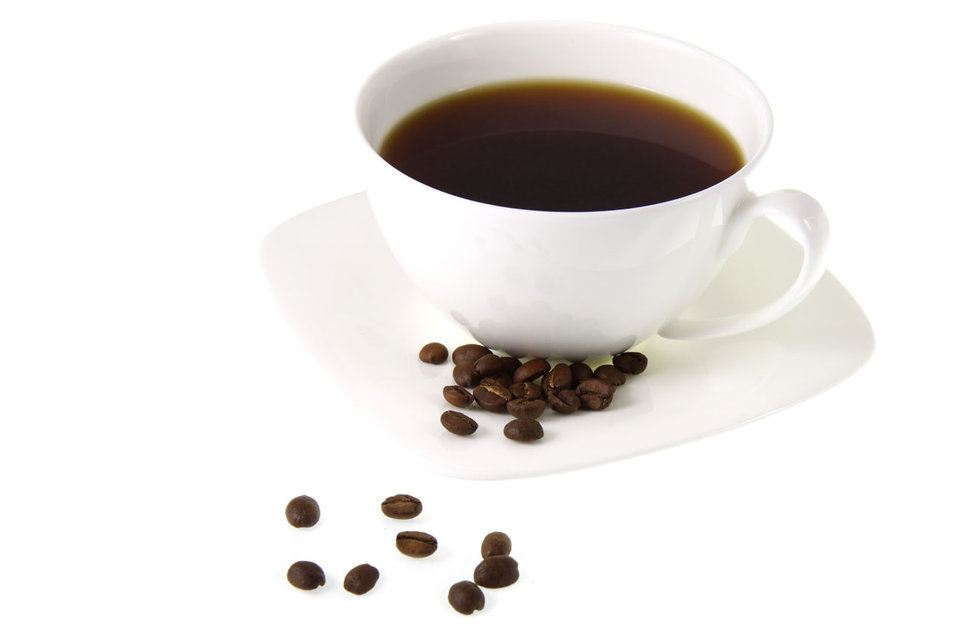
Cup of coffee

A cup of coffee on white background with several coffee beans.